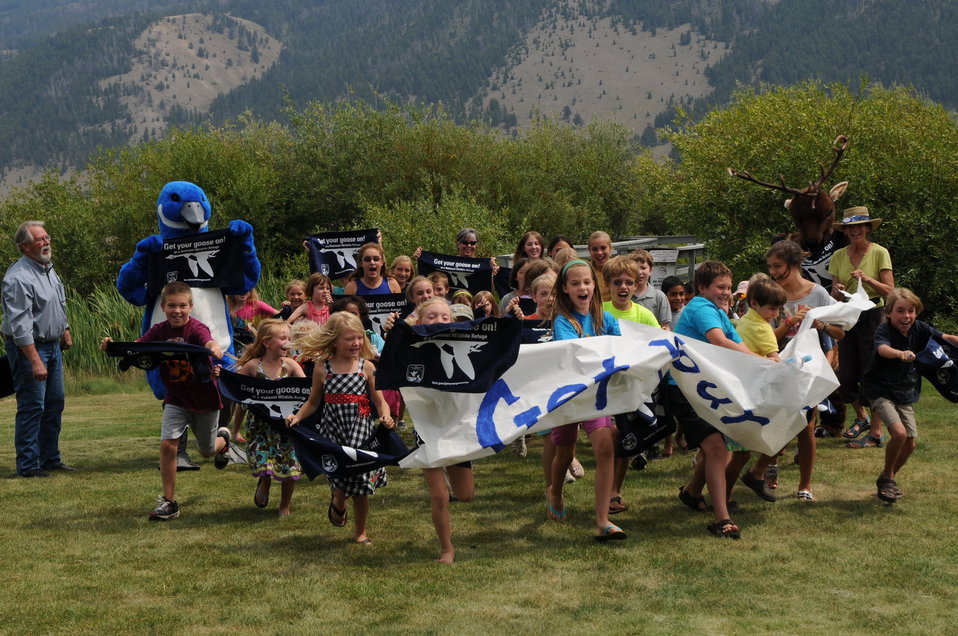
The 'Get Your Goose On' Action Shot

At the conclusion of a special children's program featuring a presentation by Theodore Roosevelt impersonator Case Hicks, a group of youngsters broke through a banner and waved their 'Get Your Goose On' towels. The activity was part of a 'Get Your Goose On' campaign sponsored by the regional office with a variety of photo shoots taking place at other refuges. The blue goose is the symbol of the National Wildlife Refuge System.